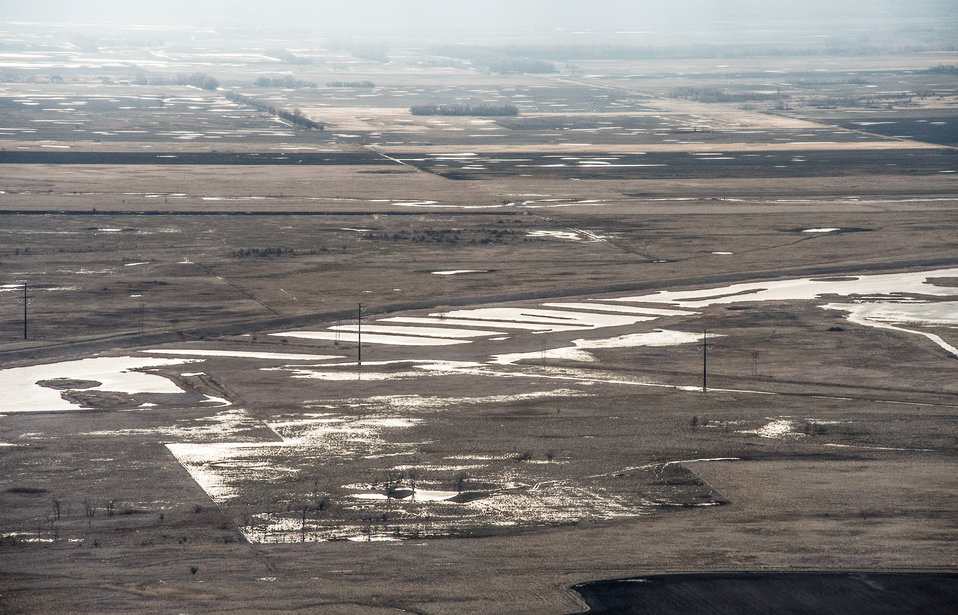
English Coulee Watershed Dam, a Public Law PL83-566 Small Watershed Program, in Grand Forks County, ND, on Tuesday, April 30, 2013. To learn about the Red River Basin Initiative, see www.mn.nrcs.usda.gov/news/features13/RRBI.html.